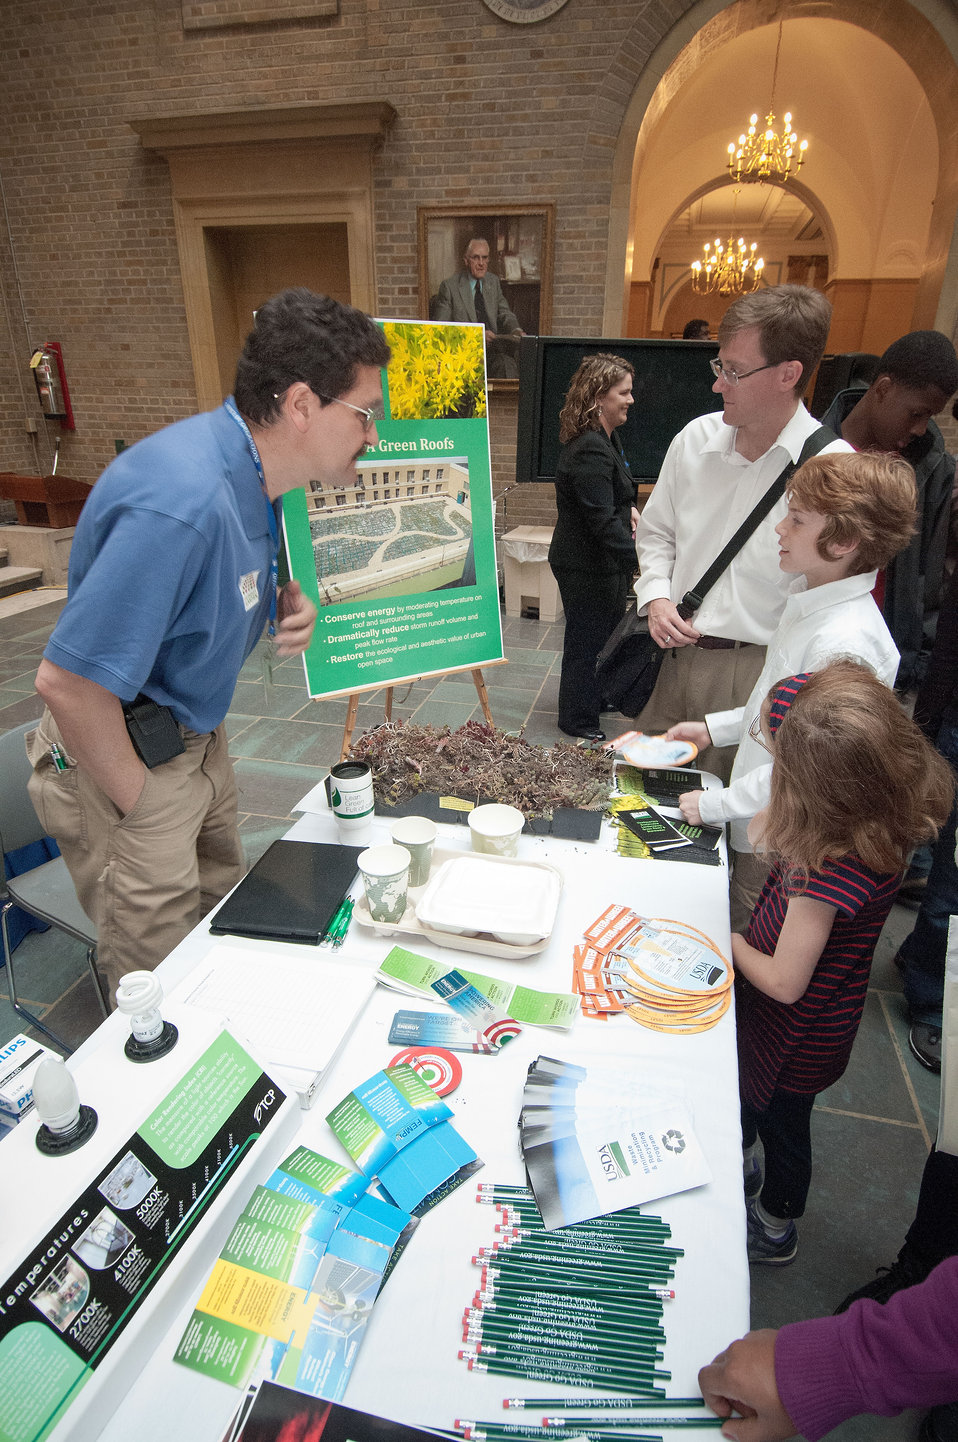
Ed Murtagh (left), Sustainable Operations Manager at U.S. Department of Agriculture explains the construction of one of the Green Roofs constructed at the United States Department of Agriculture to Tony, Nick and Lily Halstead at the United States Department of Agriculture, Take Our Daughters and Sons to Work and Earth Day in Washington, D.C., on Thursday, April 26, 2012.